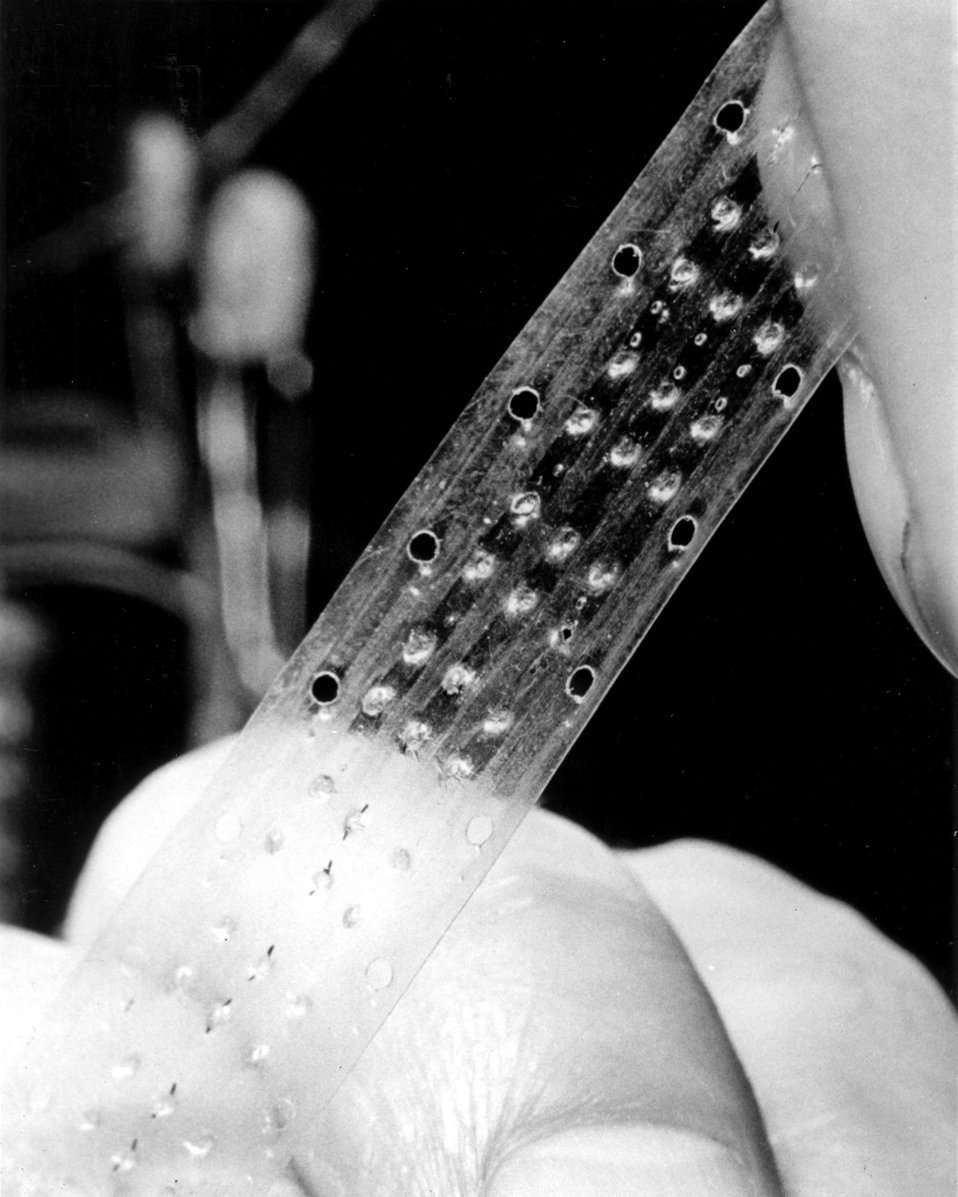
Braille machine reading belt at Argonne.
c.1974